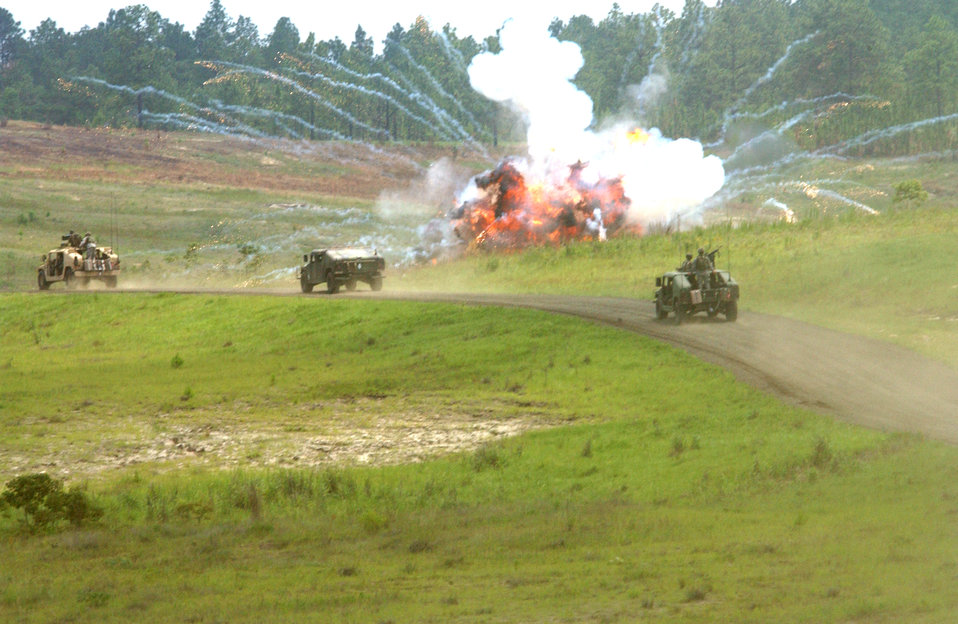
Air Warrior II tests aircrews and controllers

FORT POLK, La. -- A roadside bomb detonates near a convoy during Air Warrior II here. During this live-fire portion of the exercise, the Army convoy is attacked by a simulated enemy and must respond. A-10 Thunderbolt II aircraft helped suppress the simulated attack with guidance from Air Force joint terminal attack controllers embedded with the 10th Mountain Division.